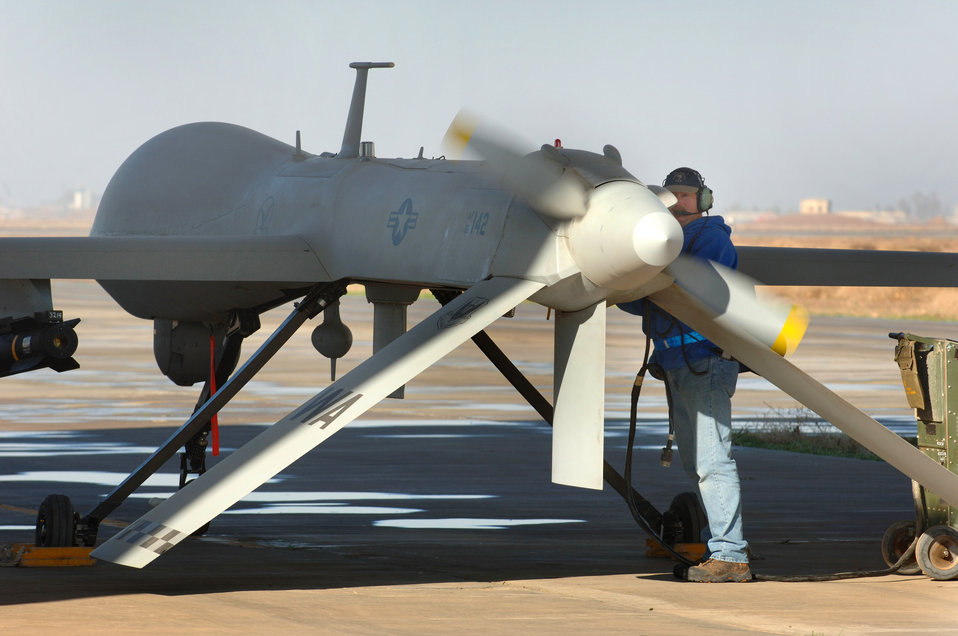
Silent eye in the sky: Predators keep constant vigil

Bruce Ottenwess conducts pre-flight checks before launching the MQ-1 Predator Unmanned Aerial Vehicle Jan. 31 from Balad Air Base, Iraq. Mr. Ottenwess is a General Atomics Aeronautical Systems Airframe and power plant mechanic based out of Creech Air Force Base, Nev.